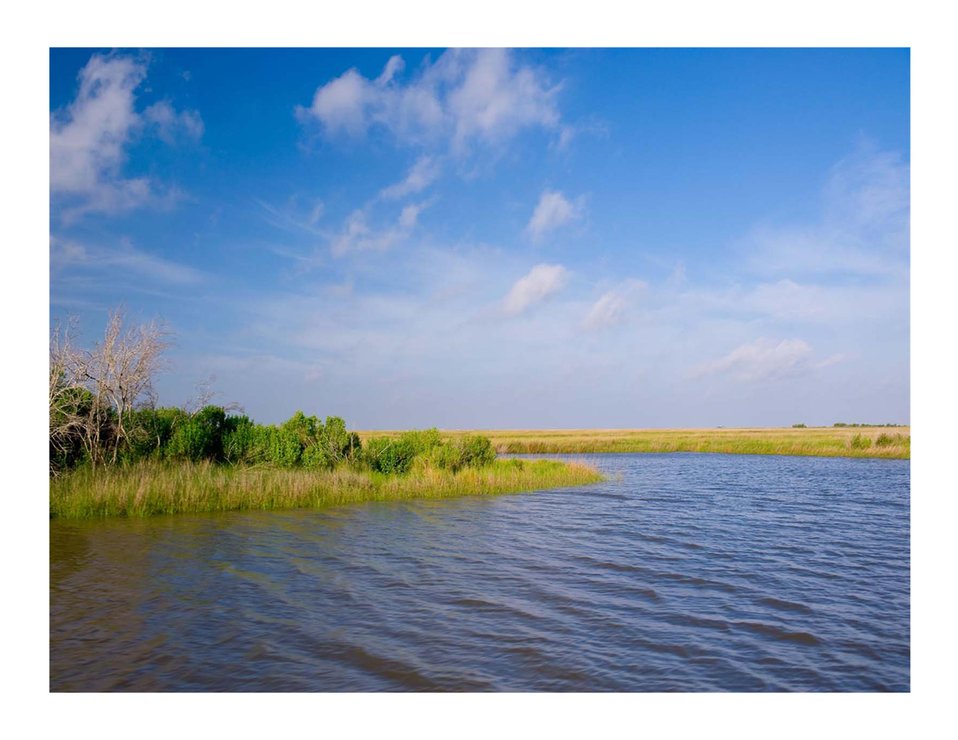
Sunny day on the marsh, Louisiana